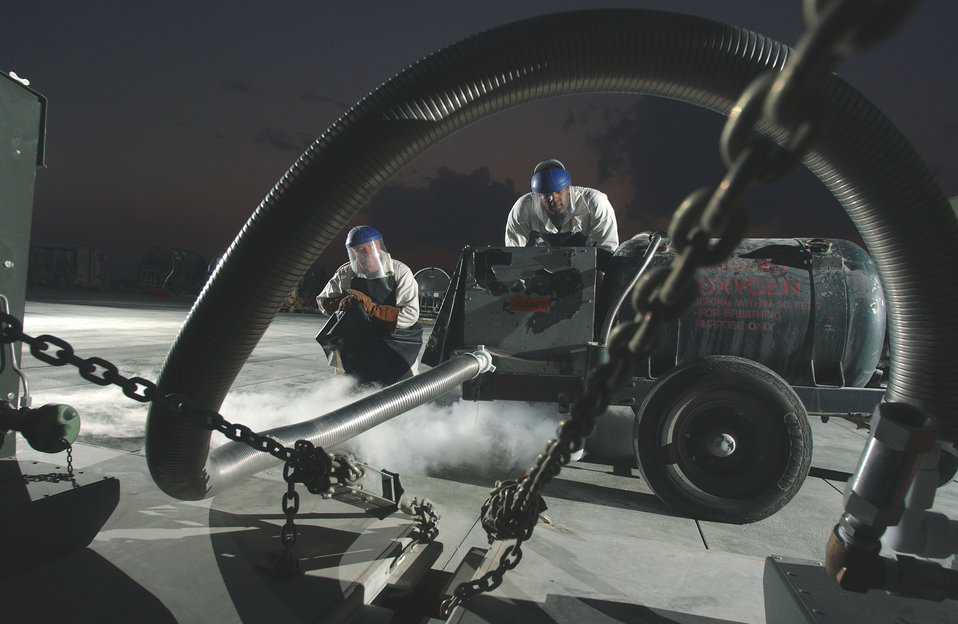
Breathing oxygen

SOUTHWEST ASIA -- Tech. Sgt. William McLeod (left) monitors the vented liquid oxygen, while Staff Sgt. Anthony Anderson monitors the gages of an oxygen servicing cart. Oxygen remains in a liquid form at temperatures below minus 297 degrees Fahrenheit. At ambient temperatures, the oxygen boils and releases air-breathable oxygen, which is normally used in pressurized aircraft. Both airmen are at a forward-deployed location. Anderson is from the 60th Logistics Readiness Squadron at Travis Air Force Base, Calif., and McLeod is from the 99th Supply Squadron at Nellis AFB, Nev.